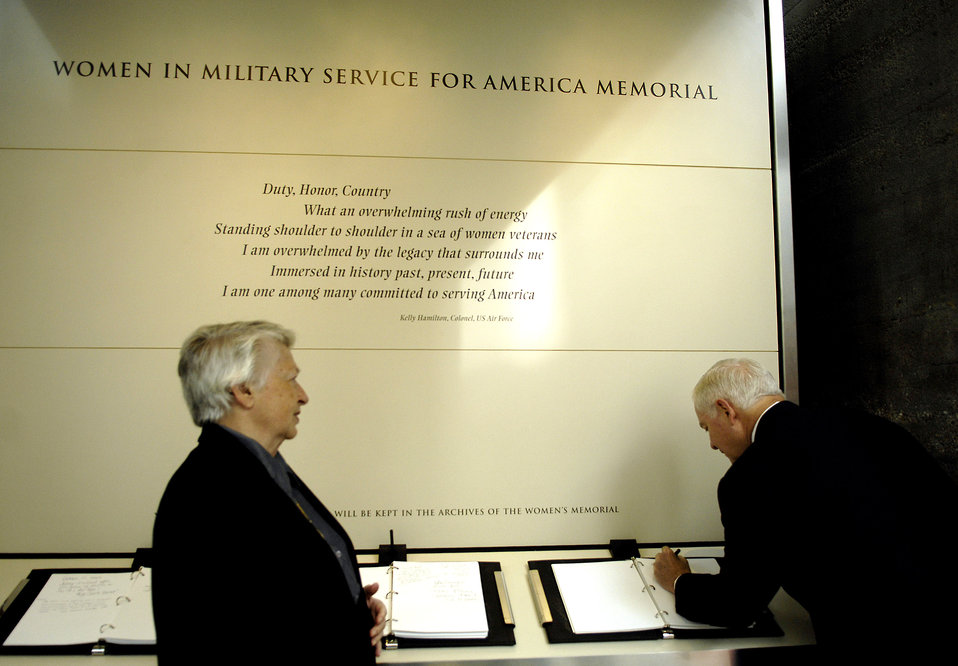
10th anniversary of WIMSA

Secretary of Defense Robert M. Gates signs the guest book Nov. 3 as retired Brig. Gen. Wilma Vaught, president of Women in Military Service for America Memorial Foundation, looks on. They were there the ceremony celebrating the 10th anniversary of the WIMSA Memorial at Arlington National Cemetery.